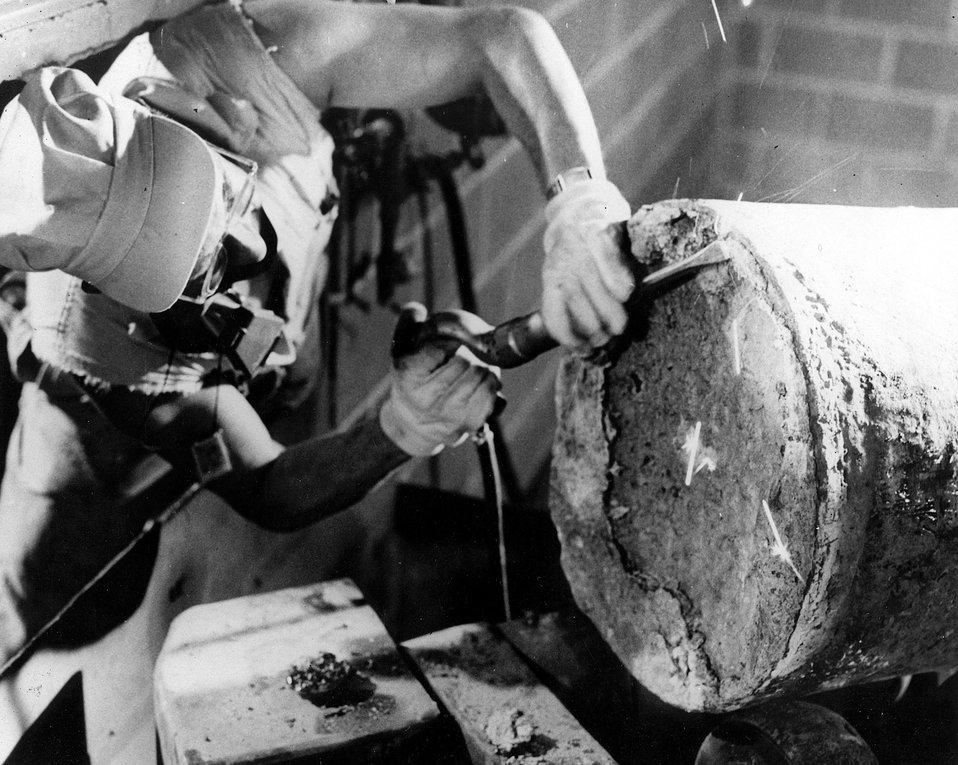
A workman at the Weldon Spring, Missouri Plant. 1965